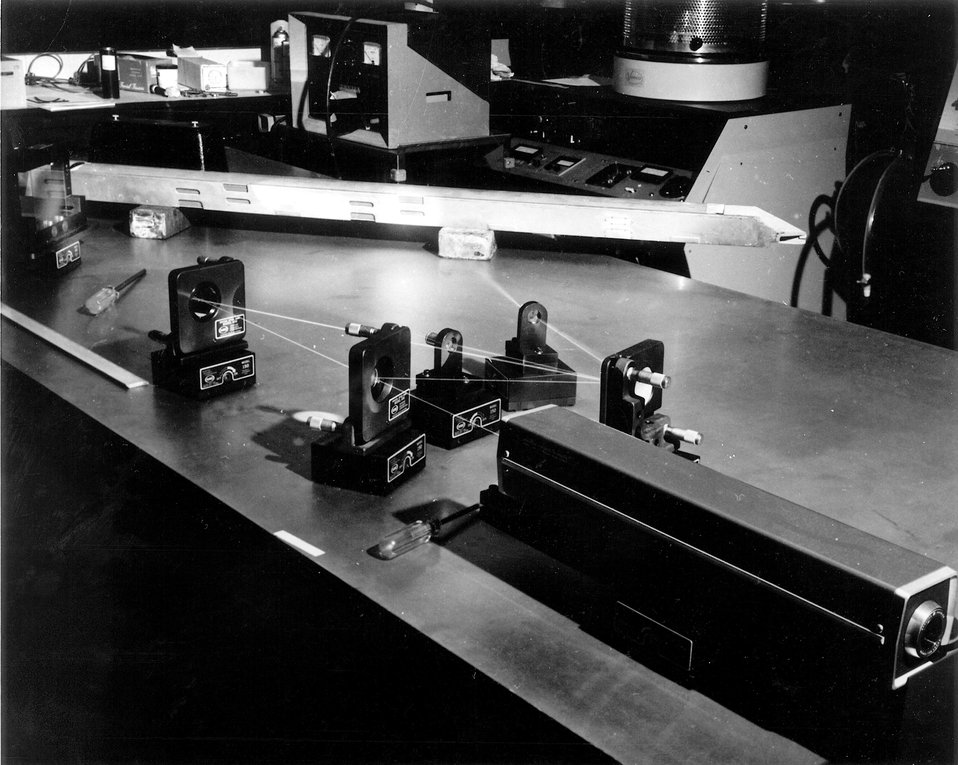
Laser apparatus for taking hologram of a fuel element section. Circa 1974.